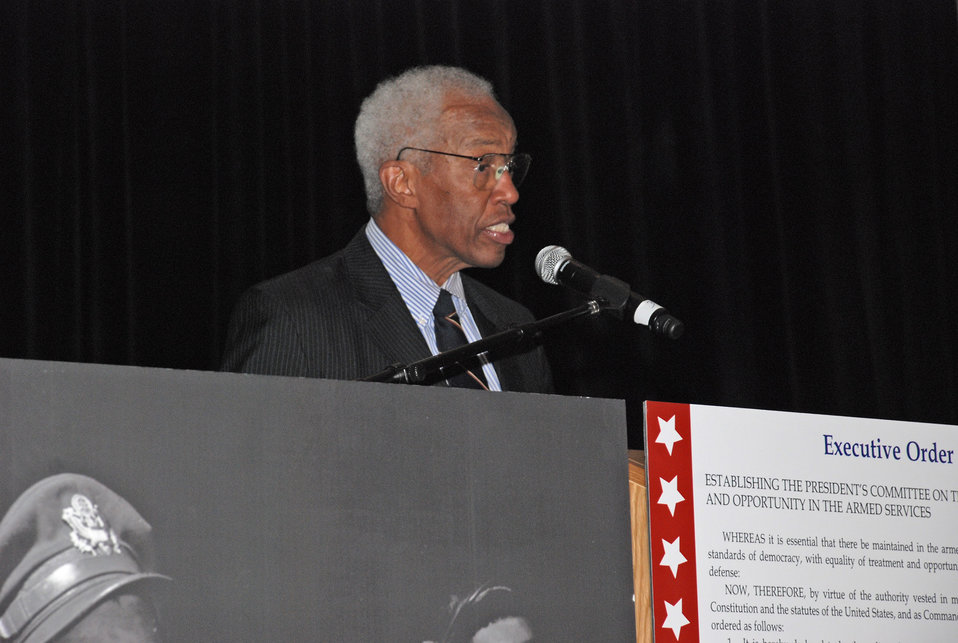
Tuskegee Airman: Follow in the footsteps of these heroes

Dr. Guion Bluford speaks during the Gen. Benjamin O. Davis Jr. Awards Gala July 19 at the 37th Tuskegee Airmen National Convention in Philadelphia. Dr. Bluford urged all members of the Tuskegee Airmen to encourage young people to follow in the footsteps of the original Tuskegee Airmen. Dr. Bluford is a retired colonel and the first African American astronaut in space.